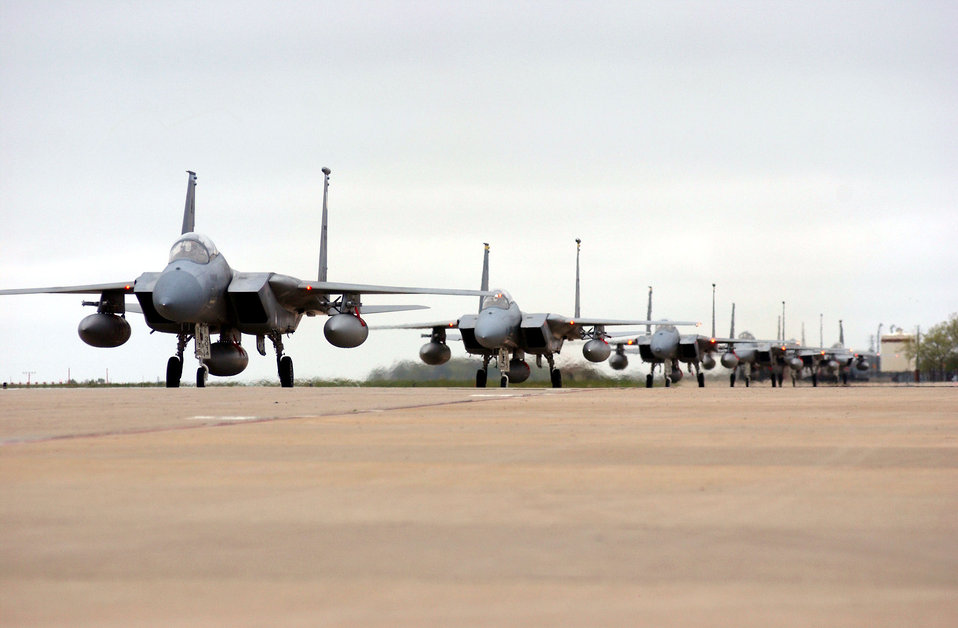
Back from Turkey

LANGLEY AIR FORCE BASE, Va. -- F-15 Eagles from the 94th Fighter Squadron return April 8 after a four month deployment in Turkey supporting Operation Northern Watch. The 94th FS deployed about 150 people and six aircraft and were one of the last units to fly in support of the mission.